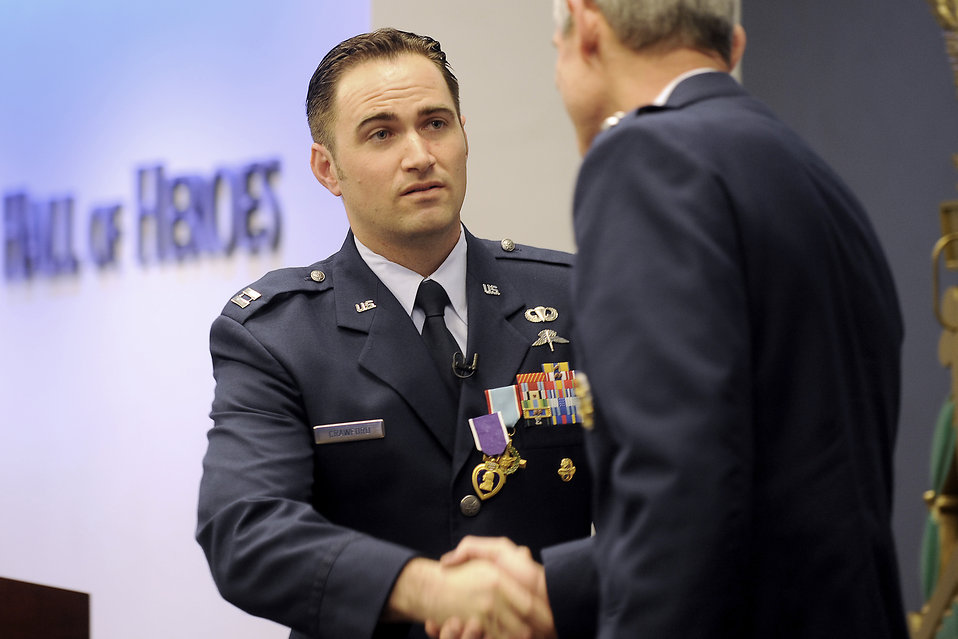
Air Force Cross ceremony

Air Force Chief of Staff Gen. Norton Schwartz congratulates Capt. Barry Crawford after presenting him with the Air Force Cross and Purple Heart during a ceremony in the Pentagon's Hall of Heroes in Washington, D.C., on April 12, 2012.